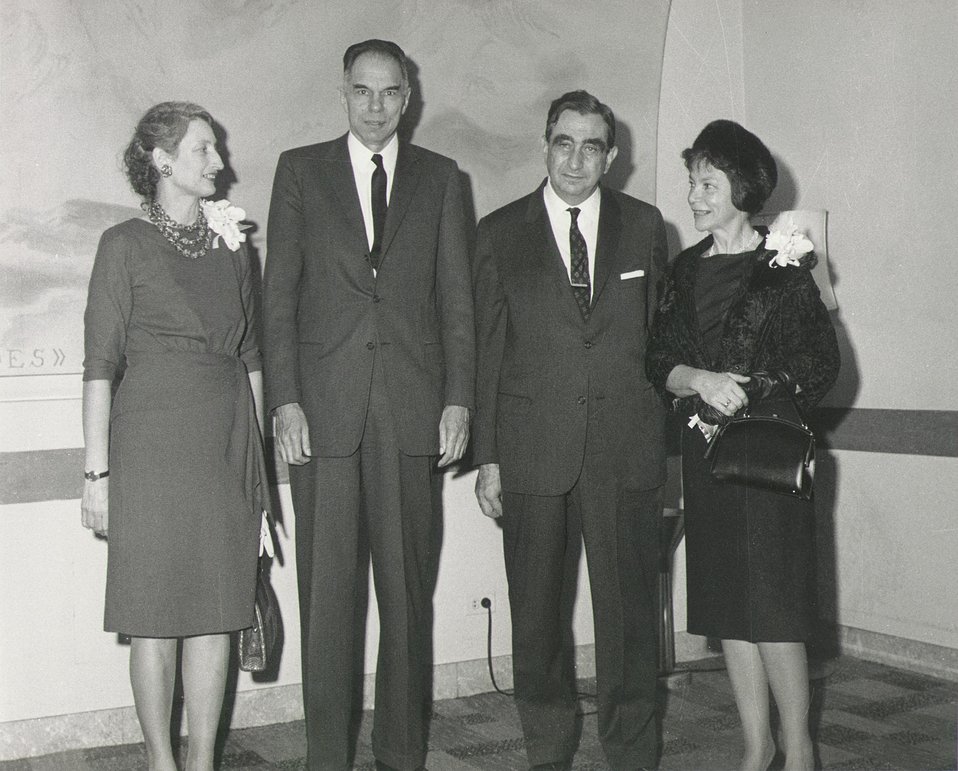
Fermi Award for Teller in 1962.